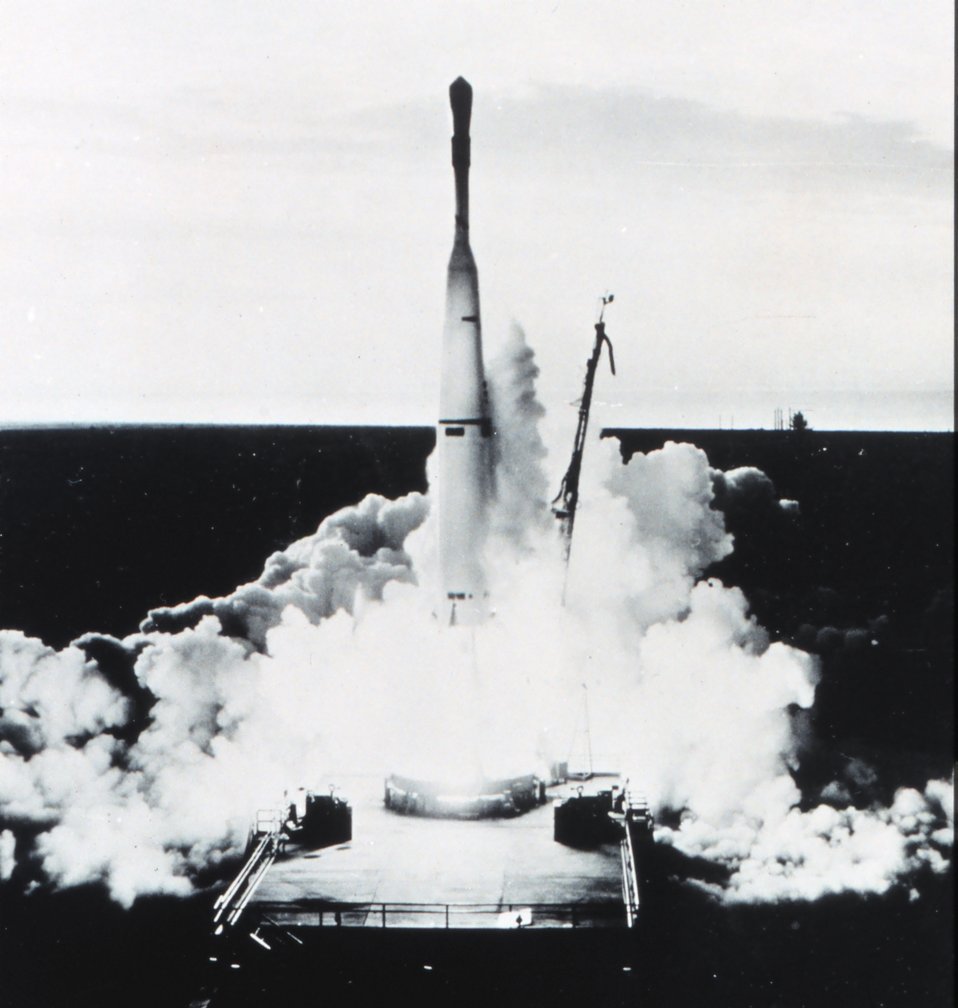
TIROS I launch. Launch vehicle was a Thor Able rocket. TIROS I was a test satellite launched by NASA.